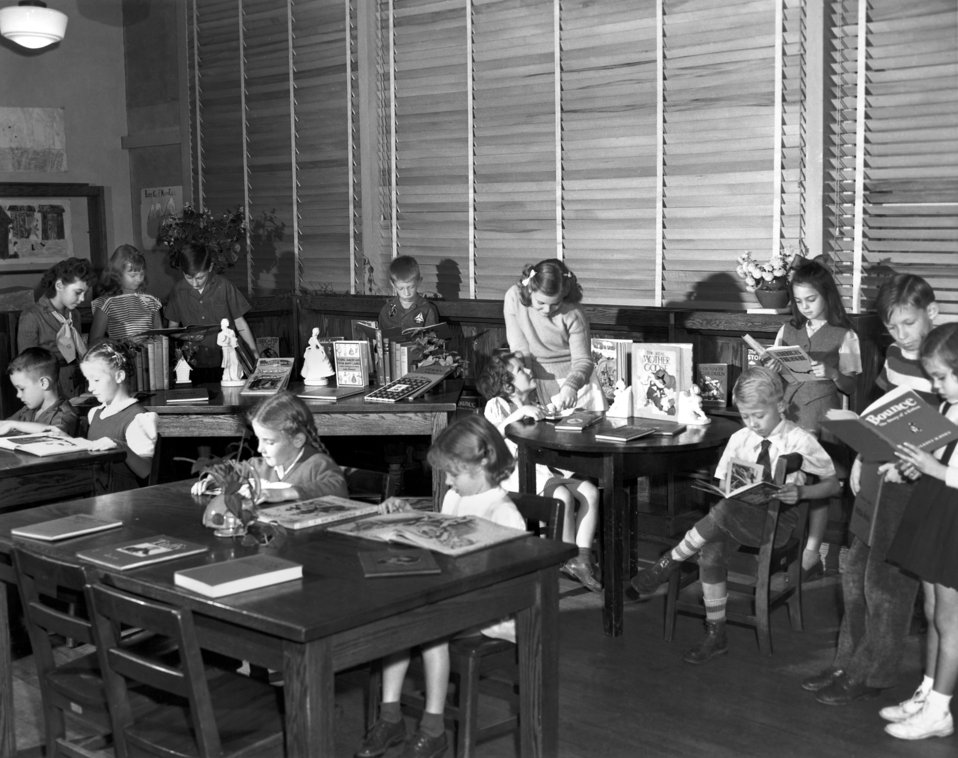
Pine Valley School Library Oak Ridge 1945

1201 DOE photo Ed Westcott 10-14-1945 Oak Ridge Tennessee